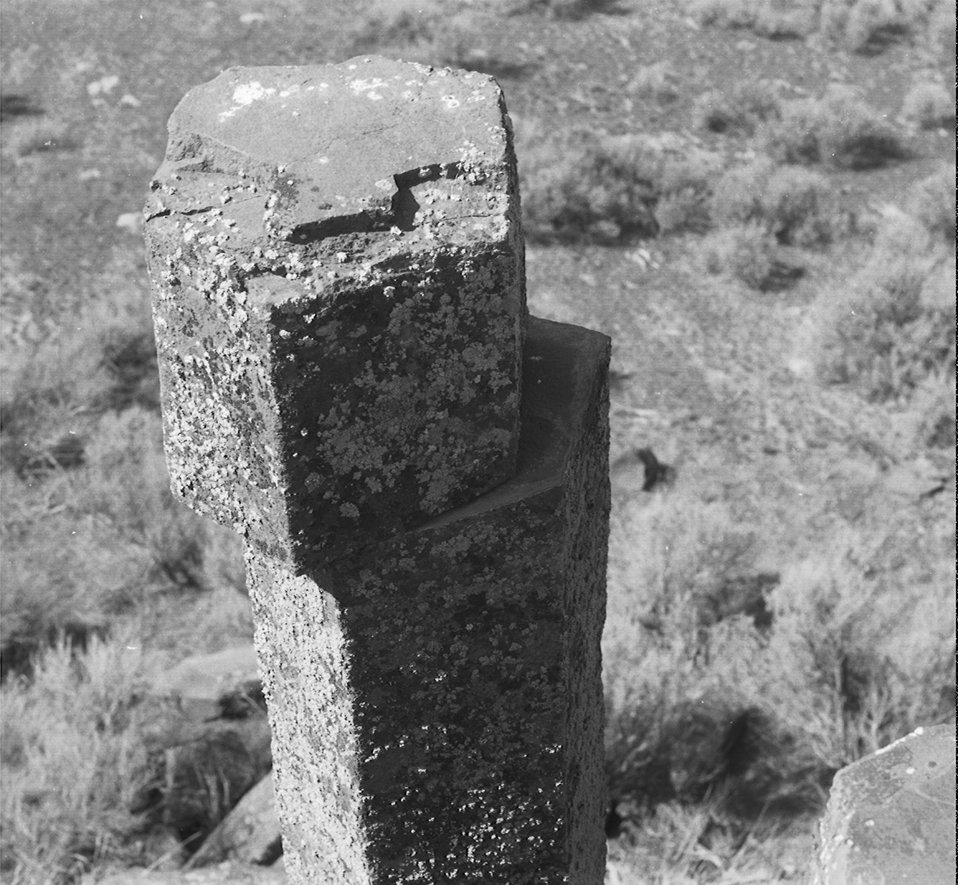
Hexagonal Basalt UCSC Upper Columbia Salmon Clearwater District